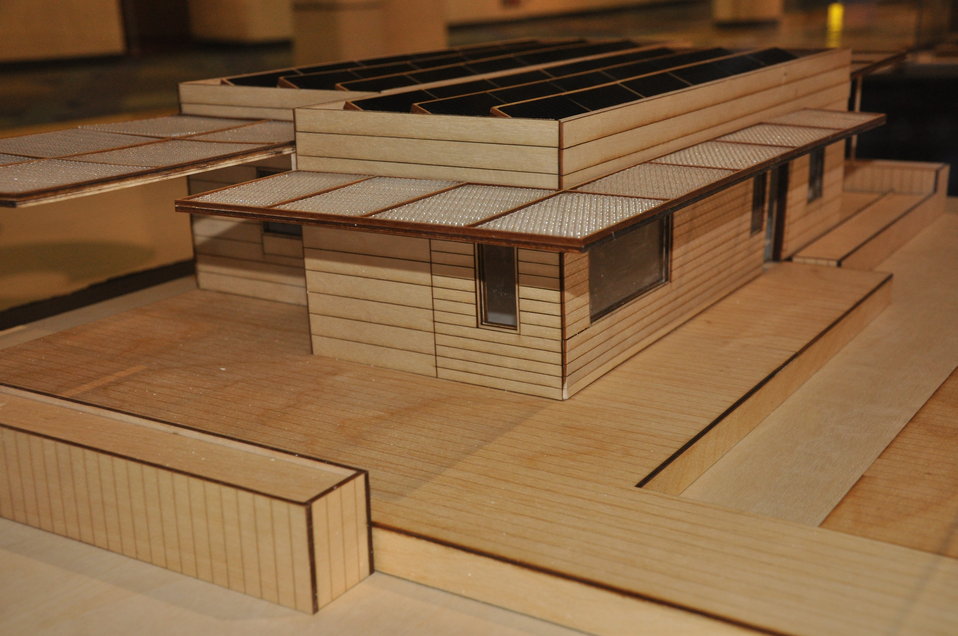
University of Illinois